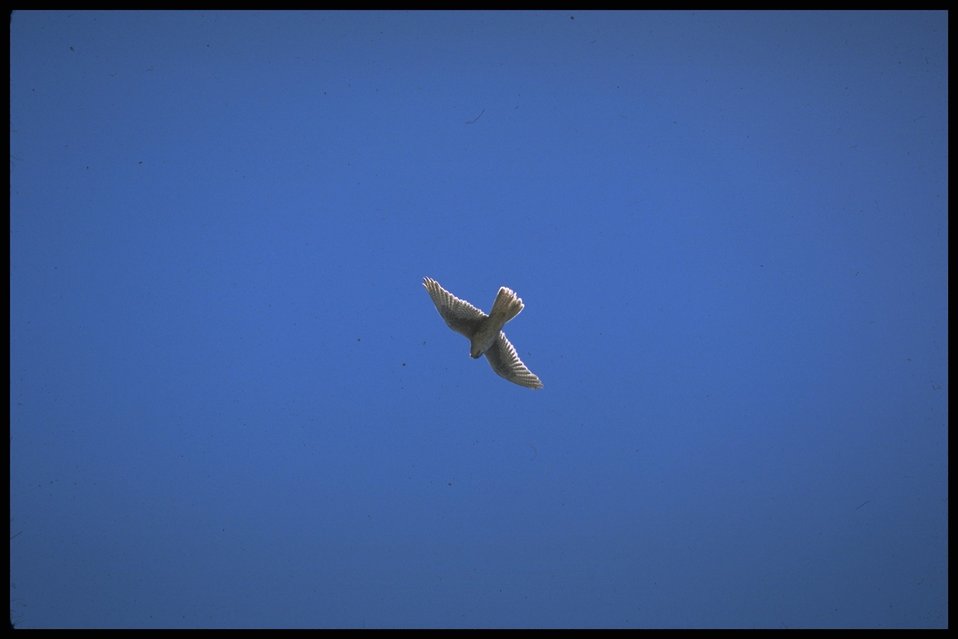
Far shot of Falcon in flight. Lakeview District.